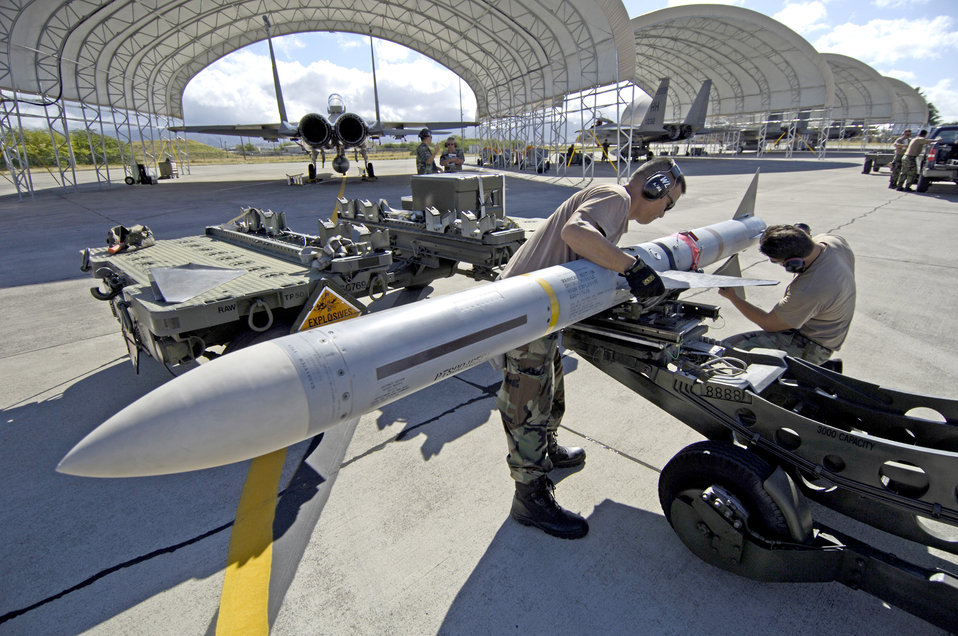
RIMPAC

Staff Sgt. Arthur Hamabata and Staff Sgt. Gabriel Coronado install the wings and fins on an AIM-7 Sparrow missile at Hickam Air Force Base, Hawaii, July 16 during the Rim of the Pacific Exercise 2006. The Airmen are from the Hawaii Air National Guard's 154th Aircraft Maintenance Squadron.